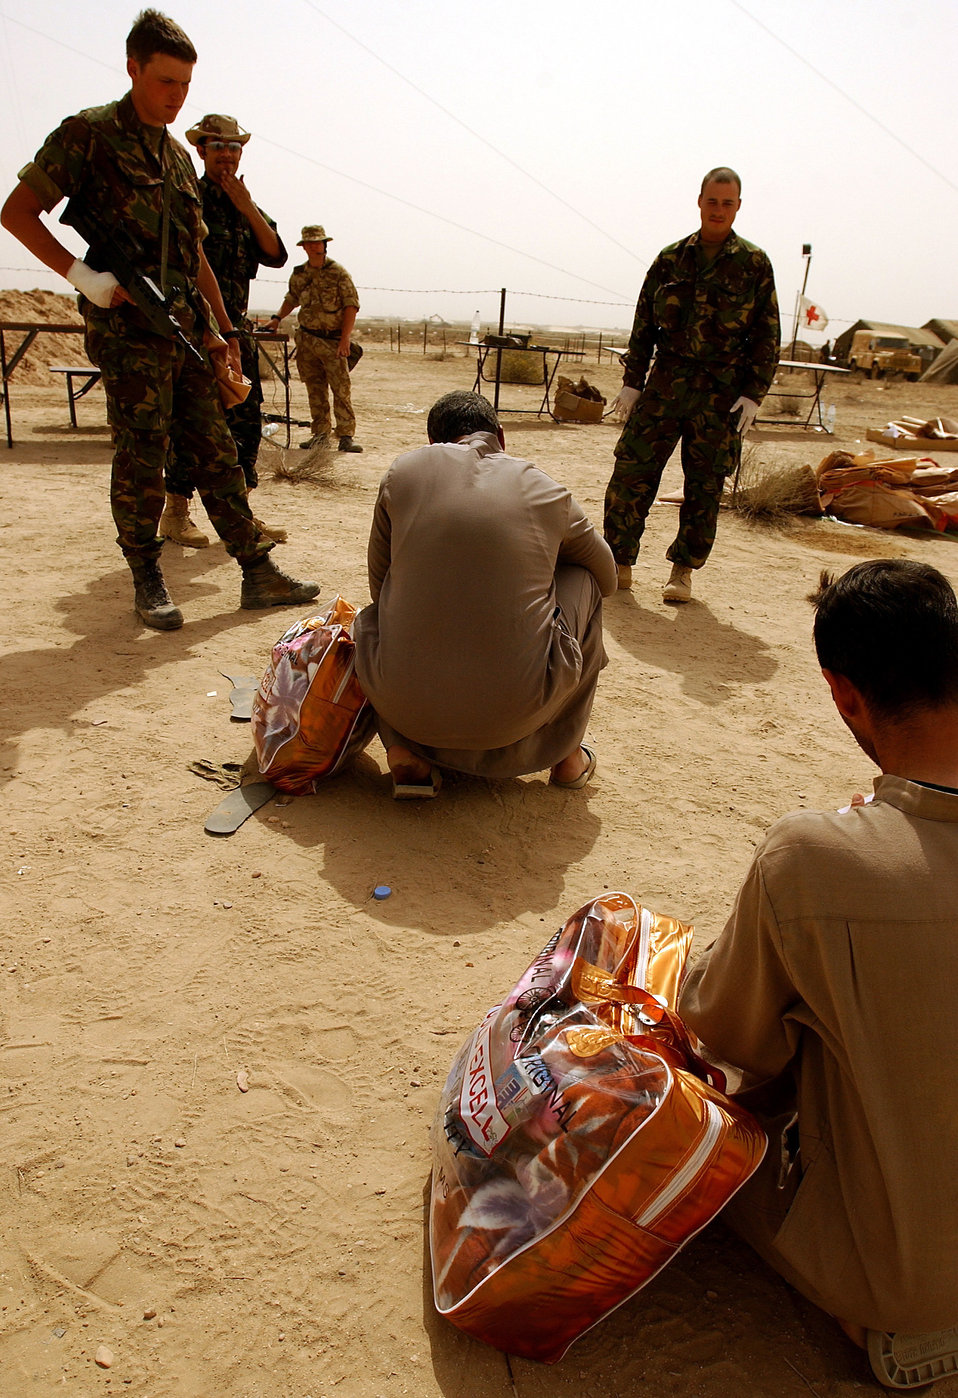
EPW inprocessing

OPERATION IRAQI FREEDOM -- Enemy prisoners of war are being inprocessed at a compound in Iraq March 31, 2003 in support of Operation Iraqi Freedom. Each EPW entering the compound is seen by a dental and medical technician and is given a blanket, dental hygiene products, and personal hygiene products as they arrive. Operation Iraqi Freedom is the multinational coalition effort to liberate the Iraqi people, eliminate Iraqi's weapons of mass destruction and end the regime of Saddam Hussein.